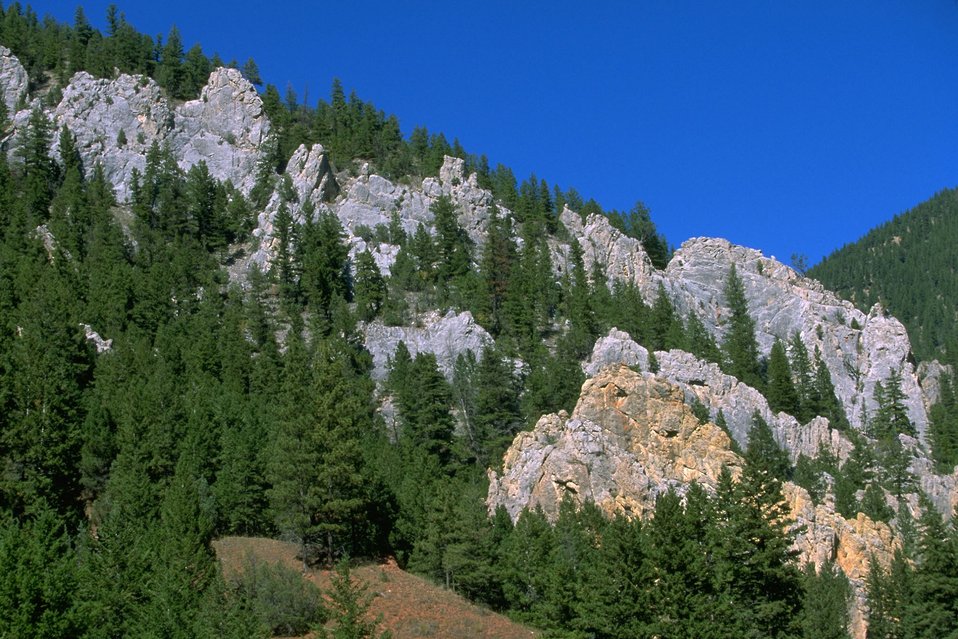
Rattler Gulch-Limestone Cliffs ACEC (area of critical environmental concern)